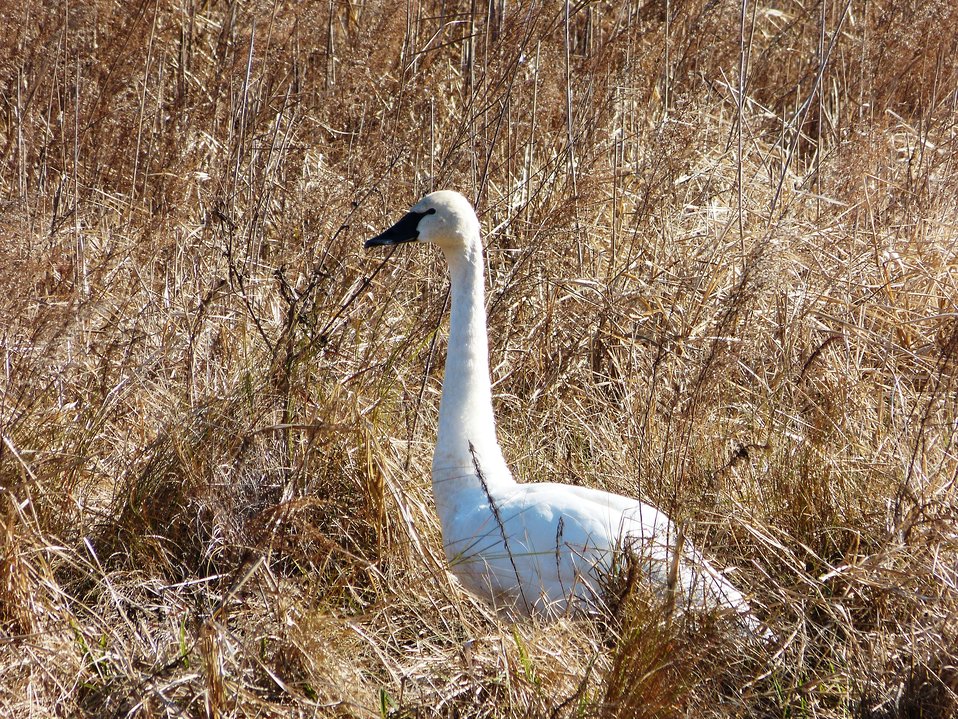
Swan at Mattamuskeet National Wildlife Refuge

At Mattamuskeet National Wildlife Refuge in North Carolina. The Refuge’s prime location along the Atlantic Flyway makes it a vitally important stopover for wintering waterfowl.